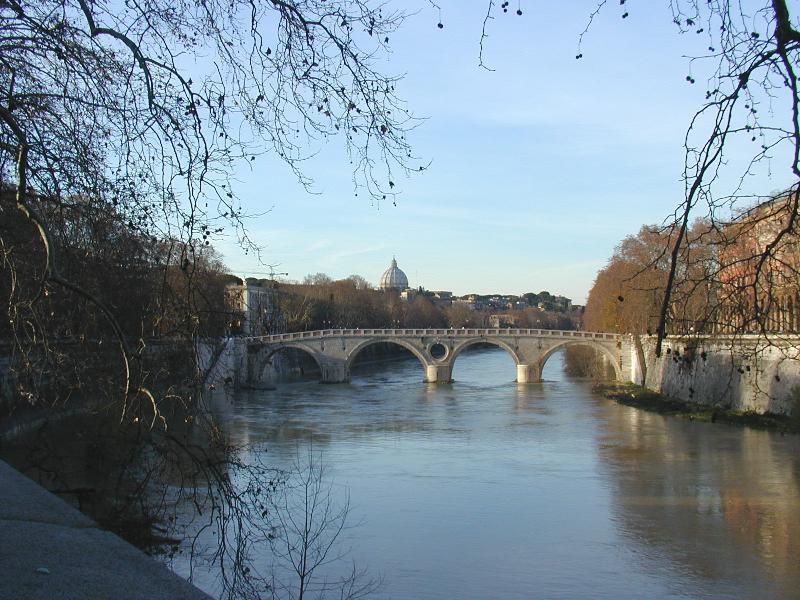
010101 13 ponte sisto 1